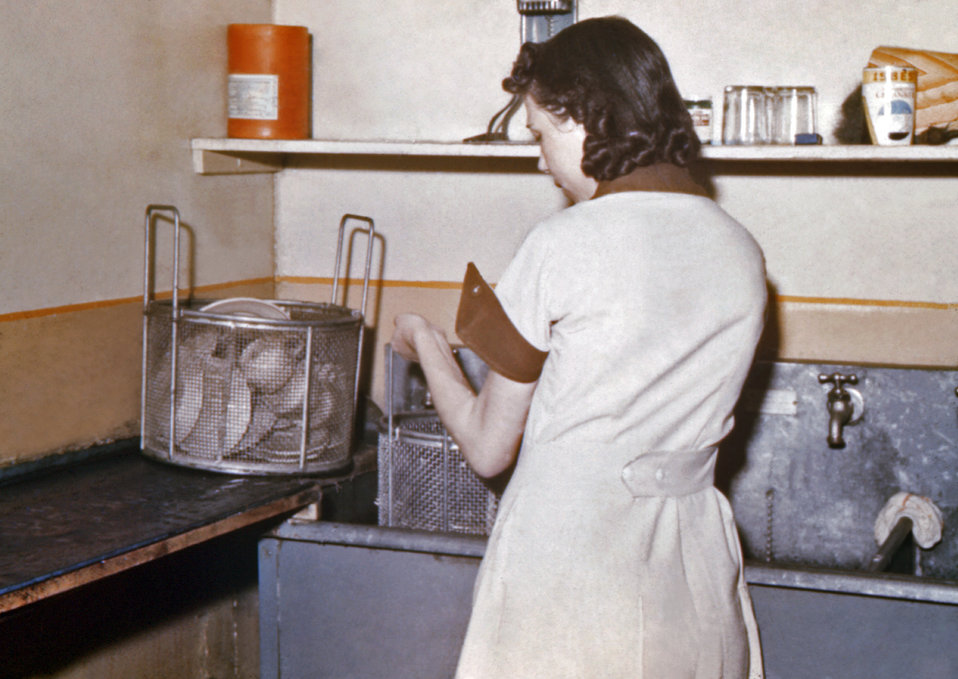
This 1950s image depicted a restaurant worker using a dip basket to wash various restaurant utensils. The apparatus was an advance in sanitation, for it made the washing, rinsing, and sterilization of utensils possible without the sanitizer's hands coming into contact with the implements. This image was part of a Minnesota Health Department campaign to promote safe food handling and to prevent food-borne illness.